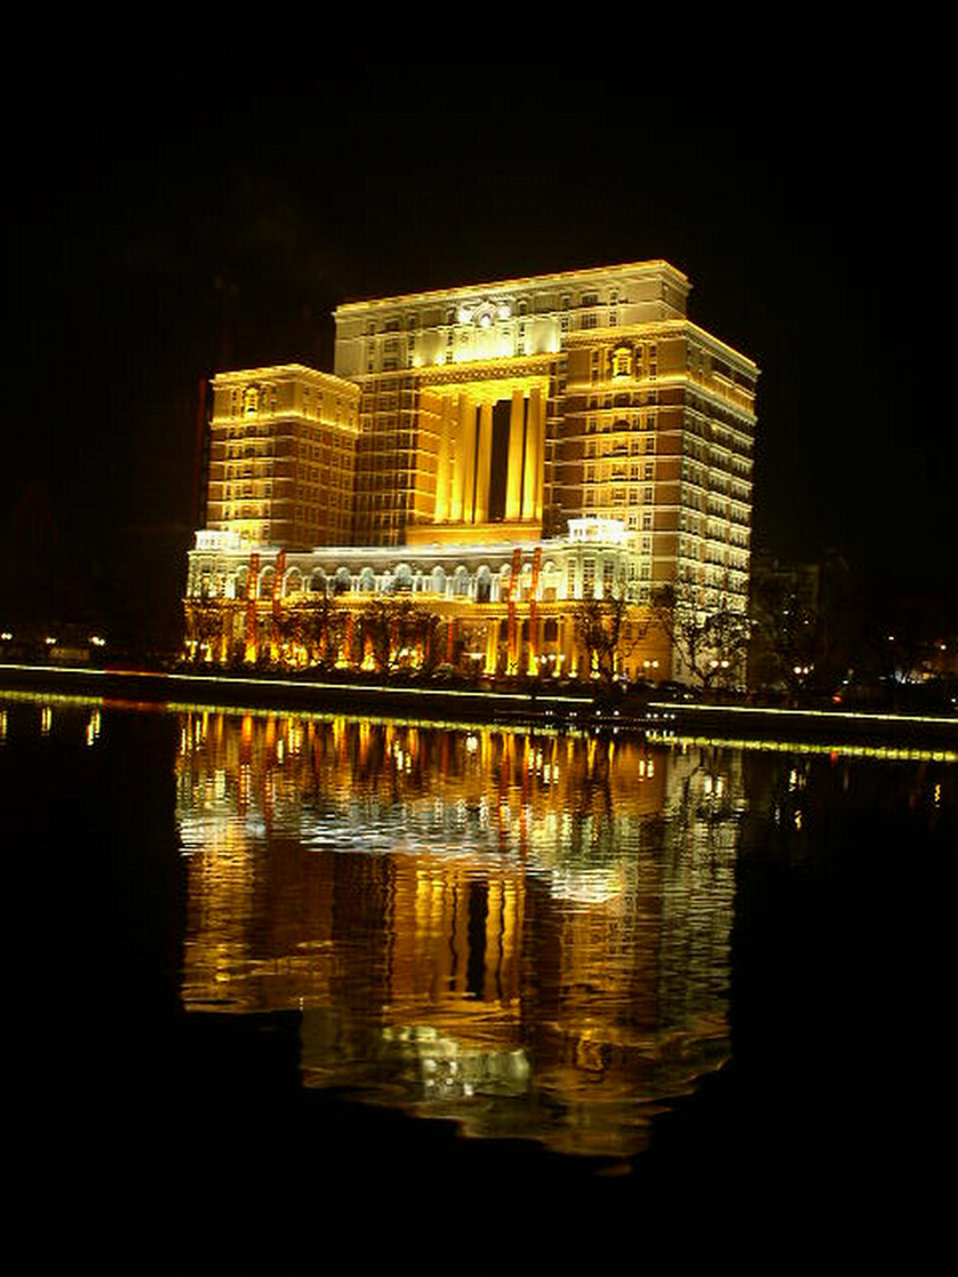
Reflection

Youfei hotel reflection.